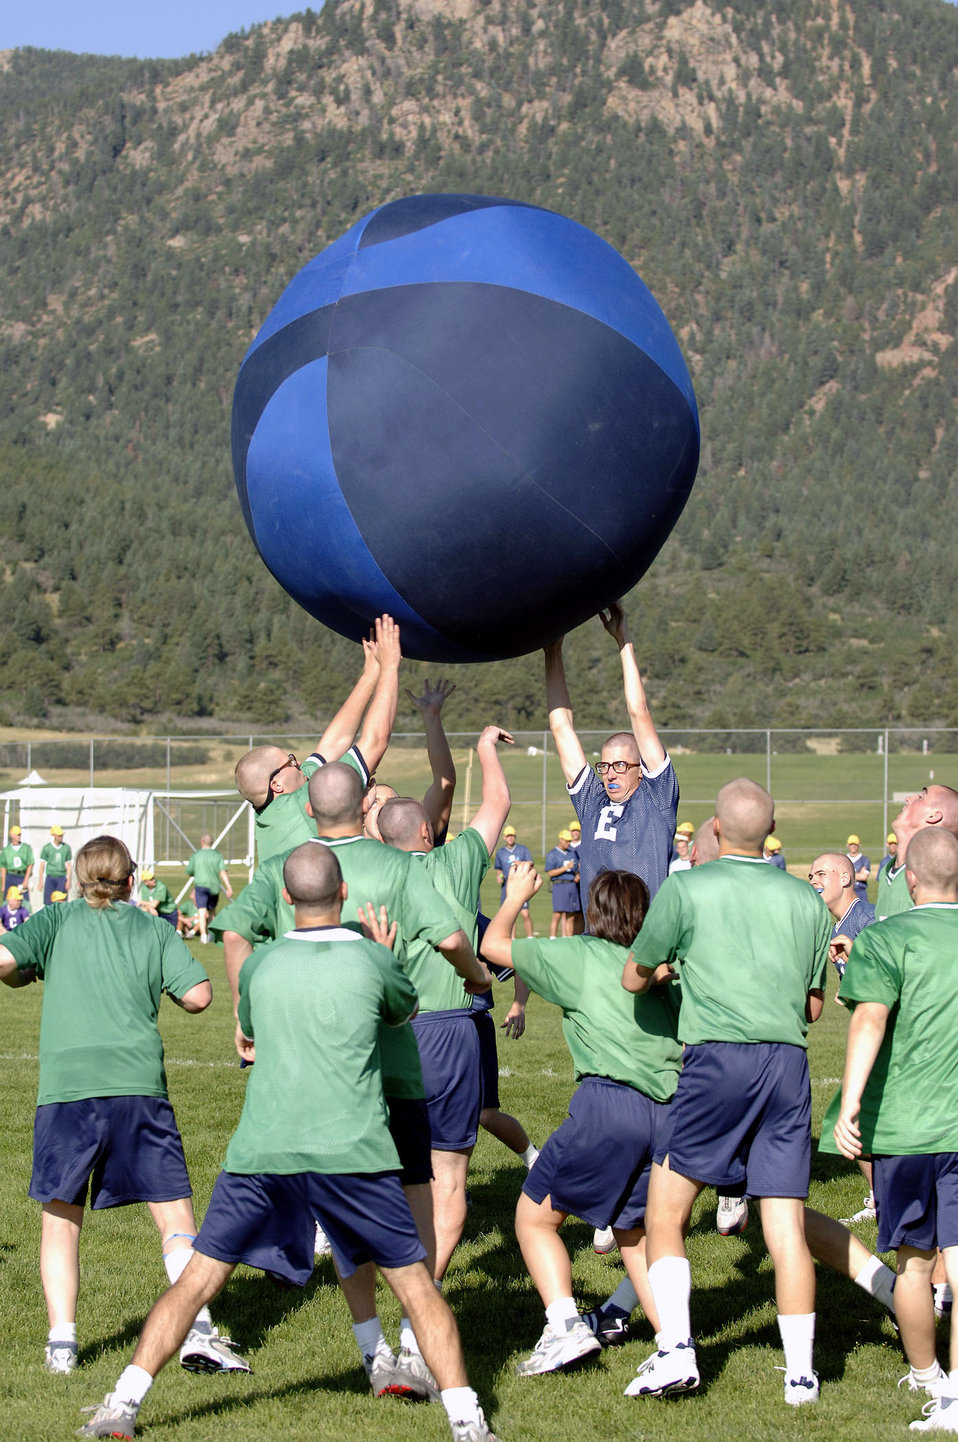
Cadets team up at field day

Basic cadet trainees play push ball at Field Day July 14 at the U.S. Air Force Academy, Colo. Push ball is a highly charged contest where cadets push a large sphere across a goal line. New cadets are in their first month of training at the Academy and are learning about honor, discipline and integrity in addition to physical fitness.